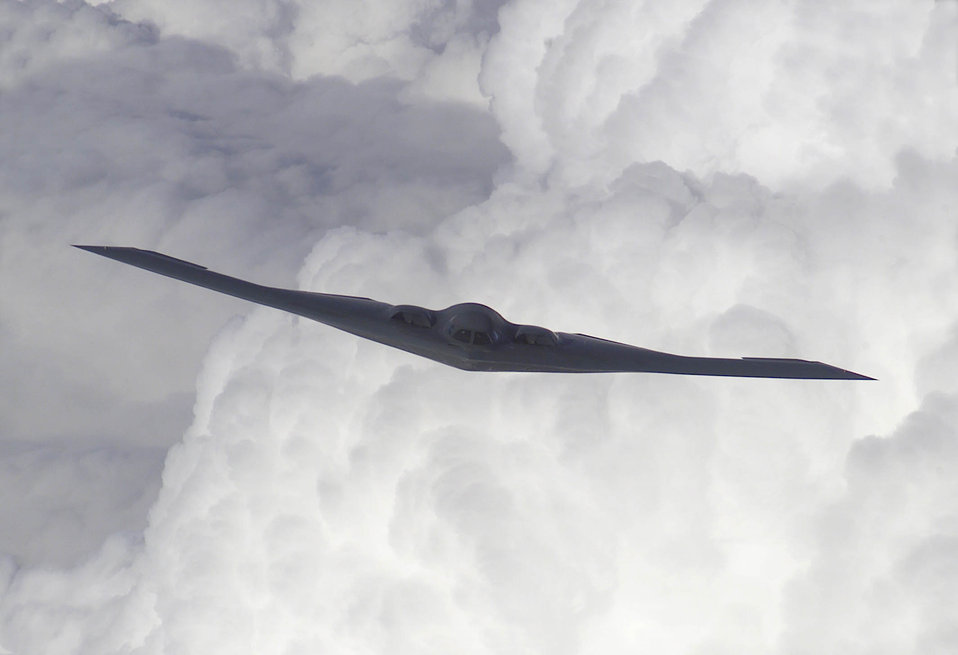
Spirit in the clouds

FILE PHOTO -- The B-2 Spirit bomber is a multi-role bomber capable of delivering both conventional and nuclear munitions. A dramatic leap forward in technology, the bomber represents a major milestone in the U.S. bomber modernization program. The B-2 brings massive firepower to bear, in a short time, anywhere on the globe through previously impenetrable defenses.